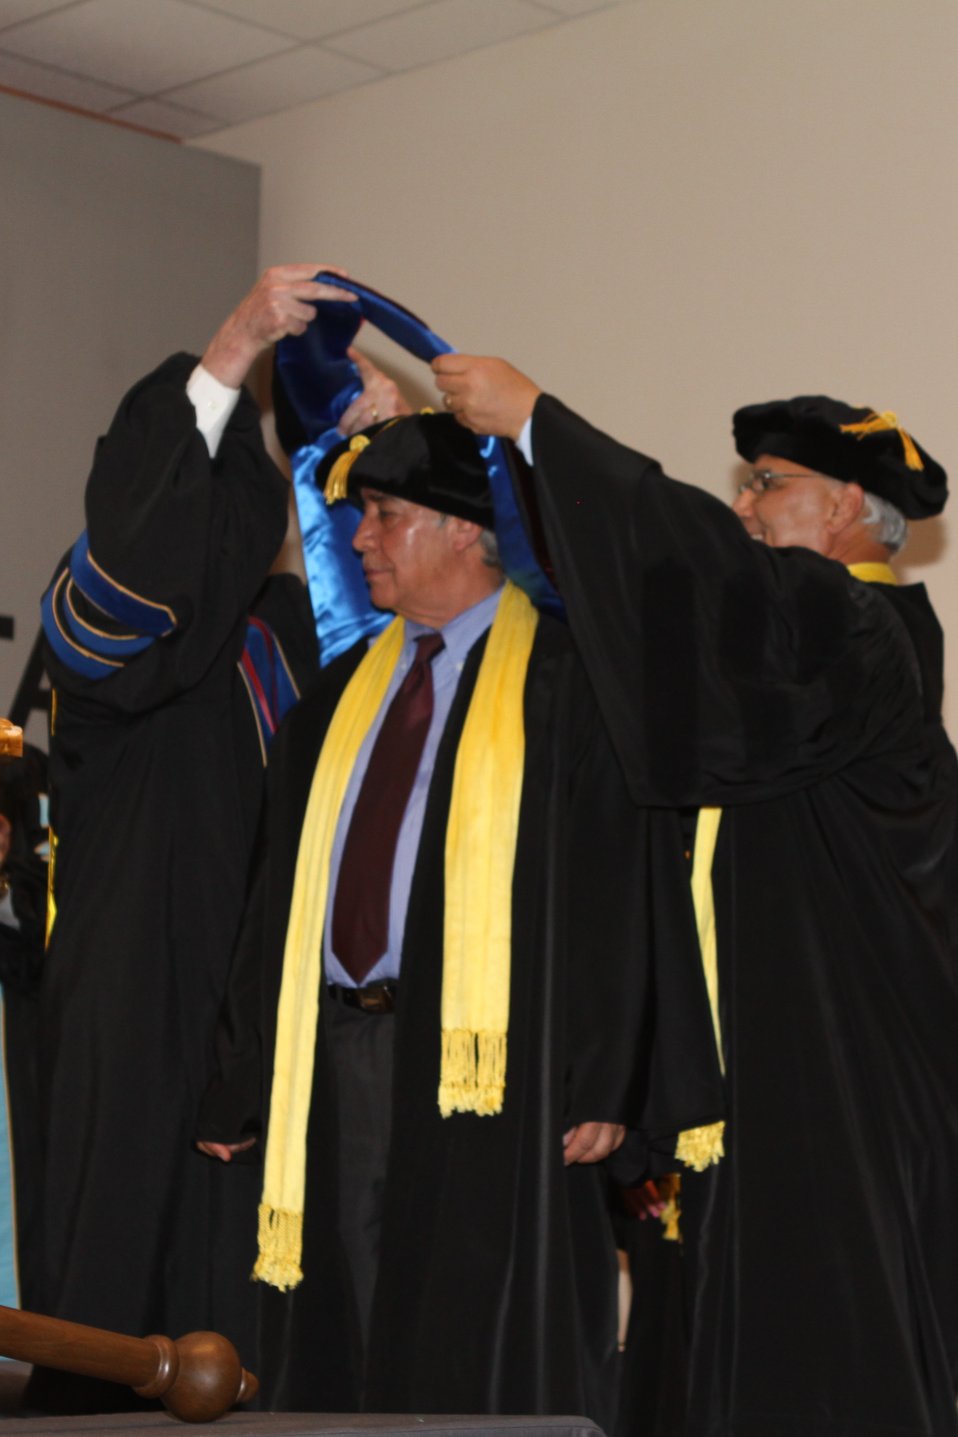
100526 AUAF Graduation 241